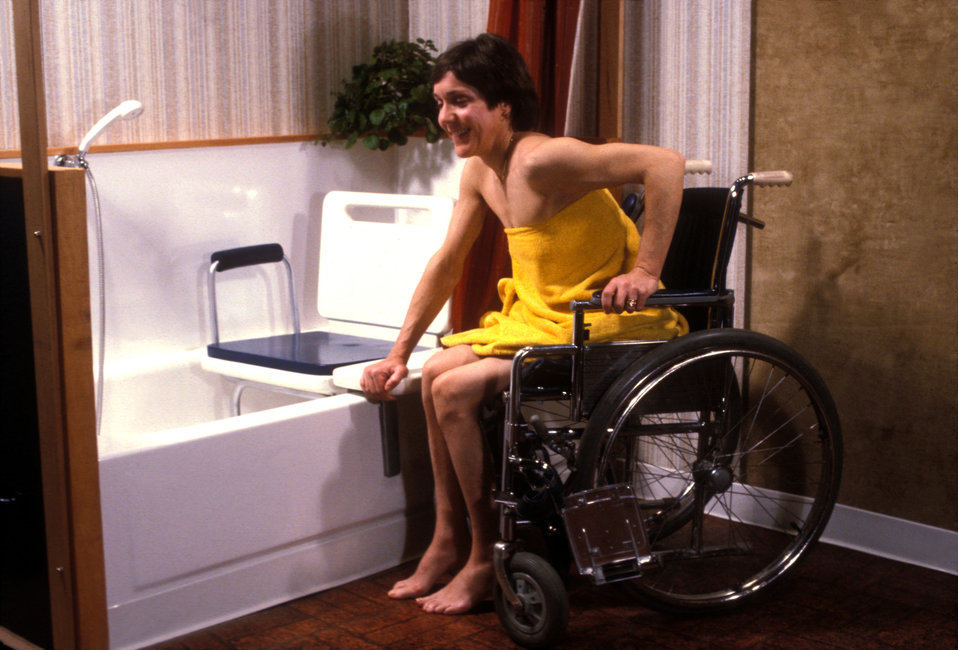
This was one of five images (PHIL# 9170 - 9174), depicting the action of two different mobility-challenged women getting into a bathtub by making use of an assistive in-tub seating apparatus. In this particular view, a woman, who was seated on the in-tub bench, was either exiting the tub, or entering the tub while she was grasping the nearby wheelchair for stability and support. With back support and armrests, a bathtub seat could be clamped to the tub rim for stability, and acted as an effective, popular solution for many people with disabilities. These designs work best for those who could transfer from their mobility devices, or could walk, but have difficulty standing for extended periods of time because of balance, or stamina limitations.